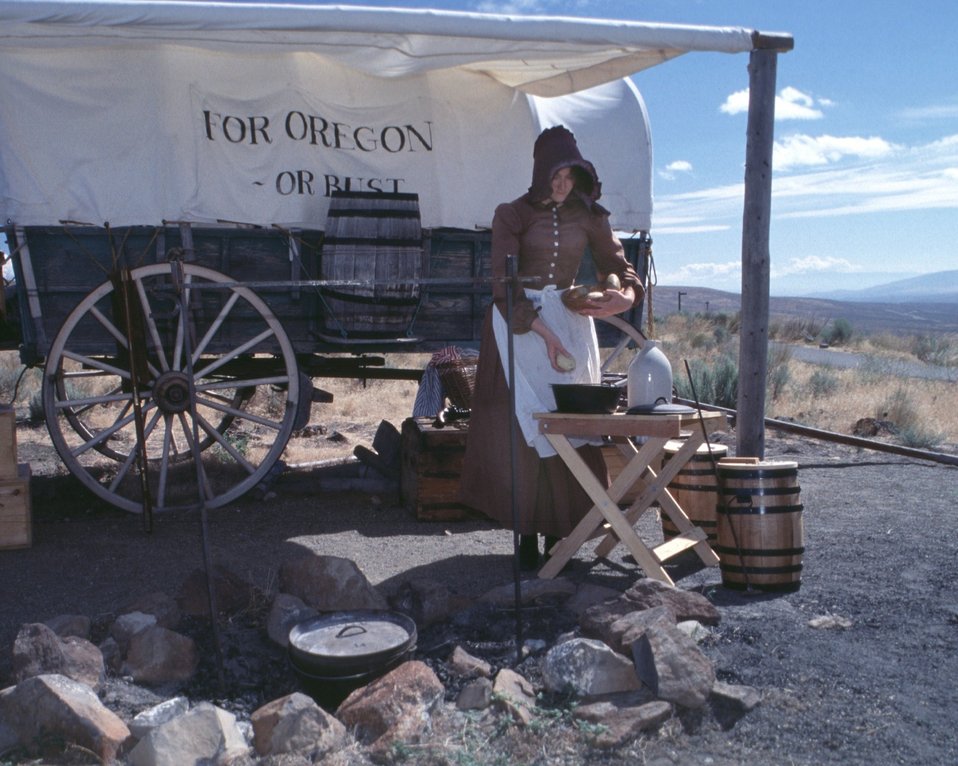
Rebecca Crow portrays a pioneer woman cooking on the Oregon Trail.